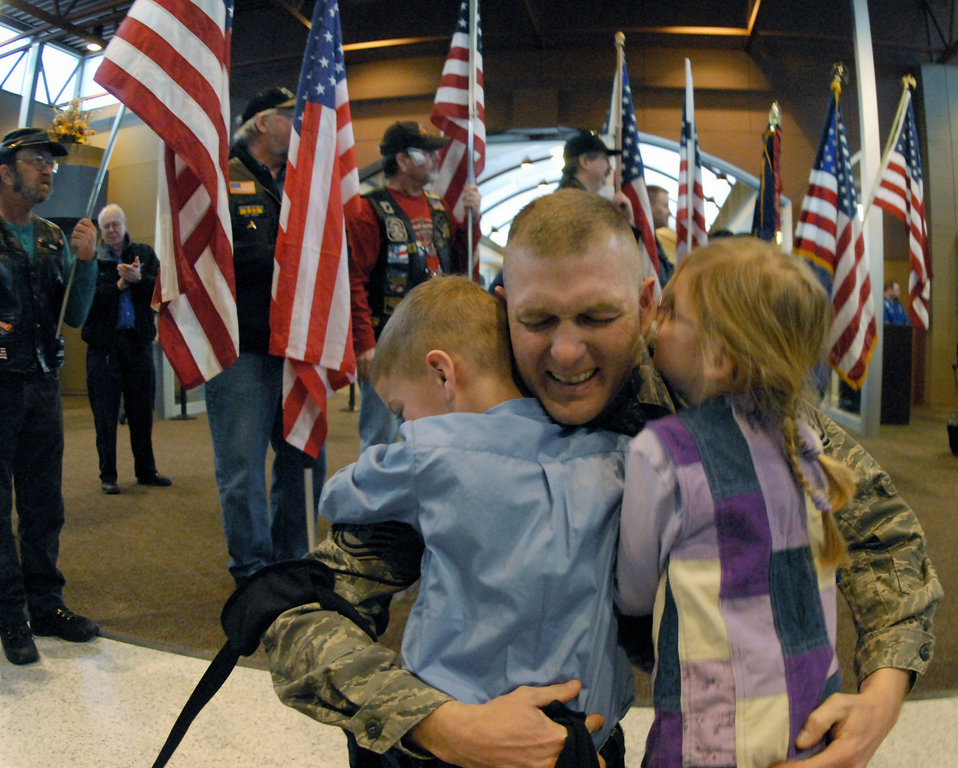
Don't let go...

Tech. Sgt. Daniel Anderson gets a big hug from his children Jan. 7 upon returning from deployment in Kuwait to Fargo, N.D. He is assigned to the 119th Civil Engineer Squadron.